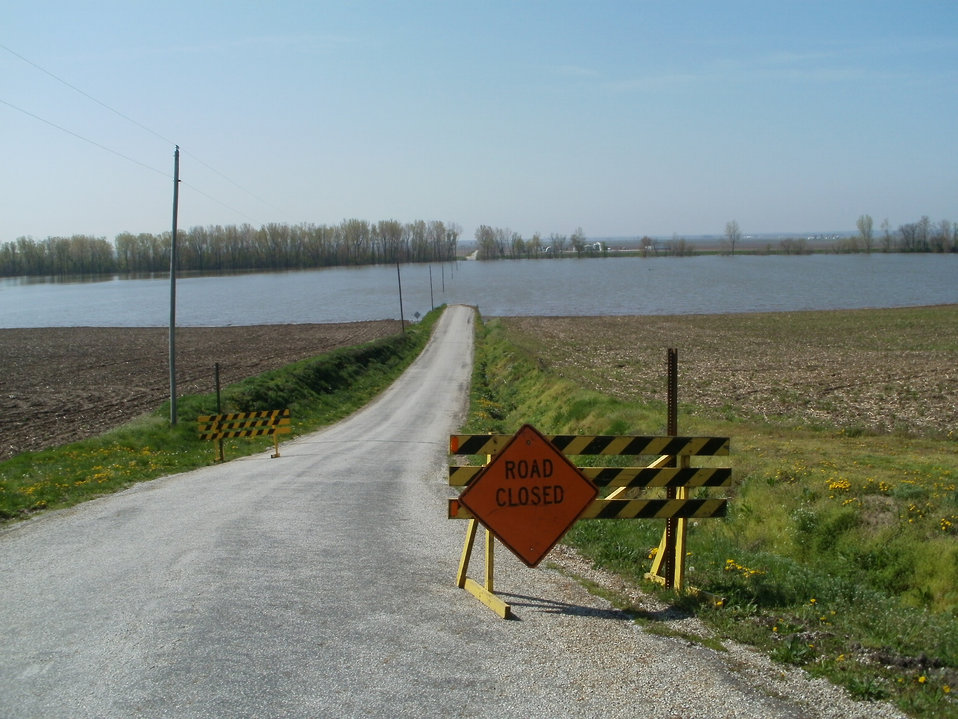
Looking South down County Road 1625E from the intersection at County Highway 12 in Section 14 of Versailles Township, IL on Apr. 27, 2013. This shows the County Road under water between County Highway 12 and the Camp Creek levee. The road emerges over the Camp Creek levee at the far end (South) of the floodwater. This location is approximately 1 ¼ mile west of the Illinois River. USDA photo Randy Tankersley.